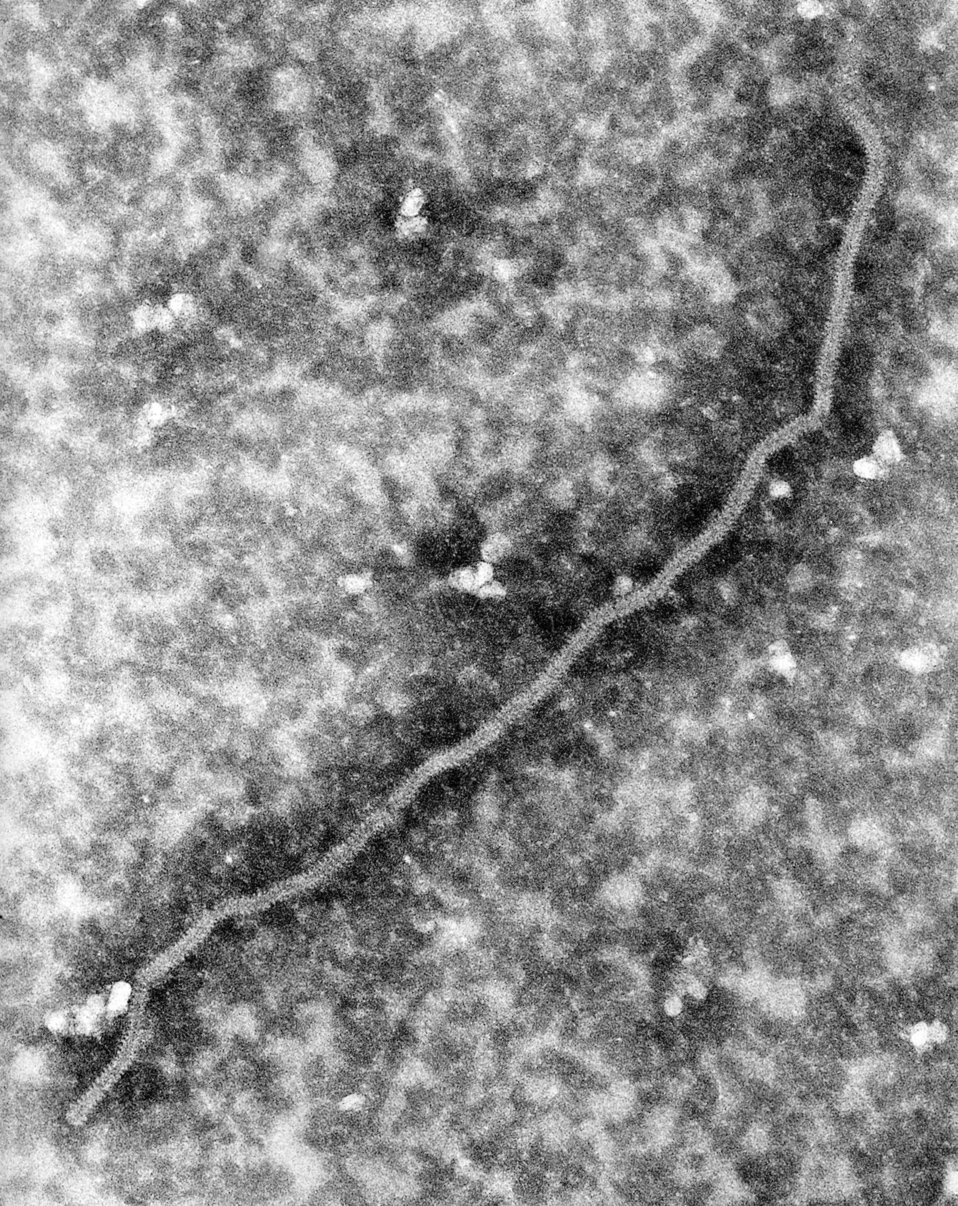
Under a highly magnified view of 168,000x this transmission electron micrographic (TEM) image revealed ultrastructural details of a Nipah virus nucleocapsid, a virus which was named for the location in Malaysia where it was first isolated.